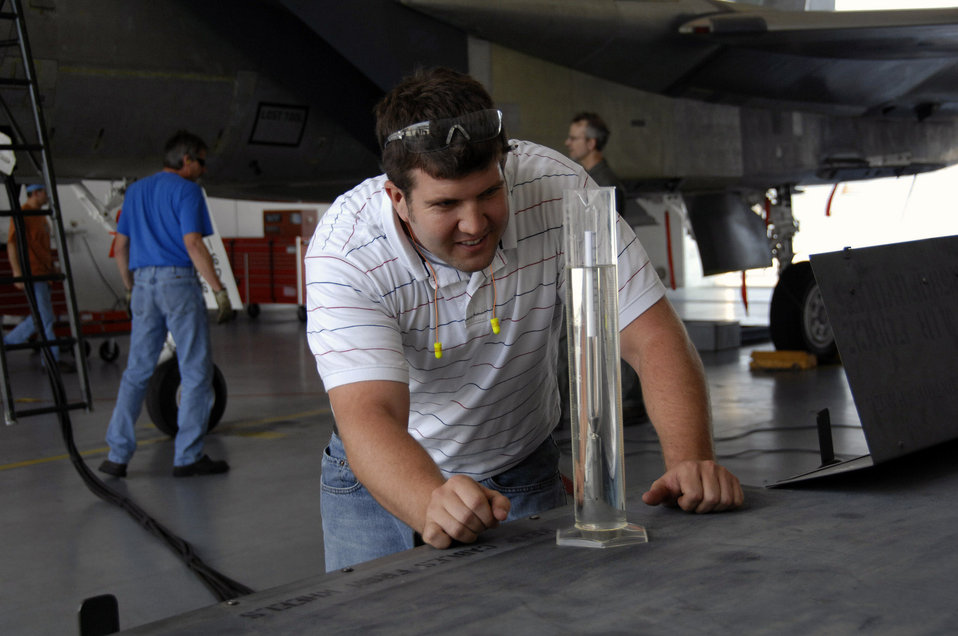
F-15 tests alternative jet engine fuel

Ryan Mead checks the density of the SJ-8 50/50 blended synthetic fuel before use in two successful F-15 Strike Eagle flight tests Aug. 19. Mr. Mead is an F-15 fuels engineer at Warner Robins Air Logistics Center, Robins Air Force Base, Ga.